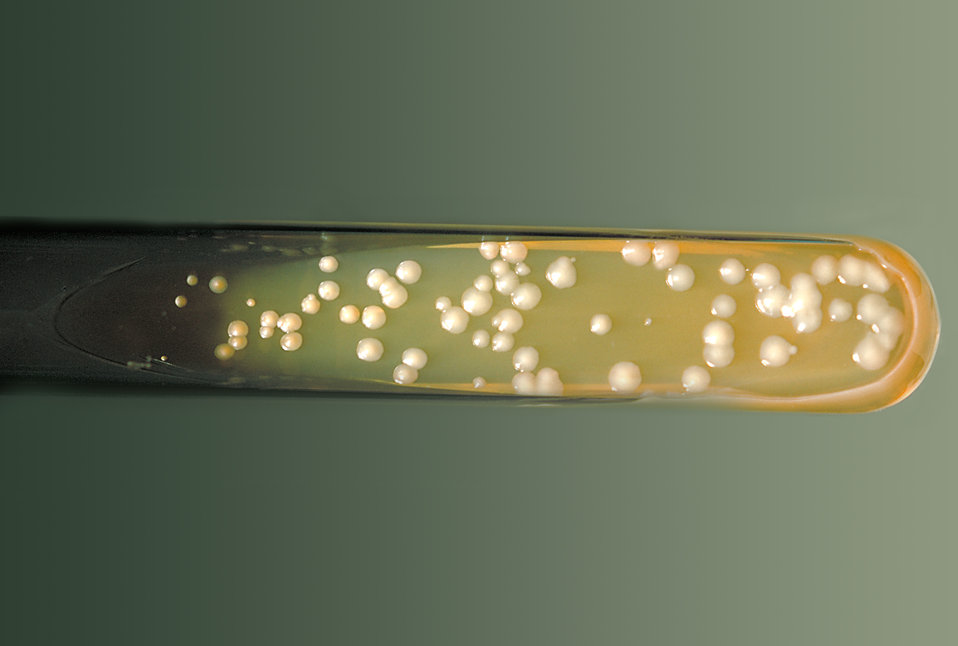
This SABHI agar slant culture is growing Cryptococcus neoforman grown at 37�C.